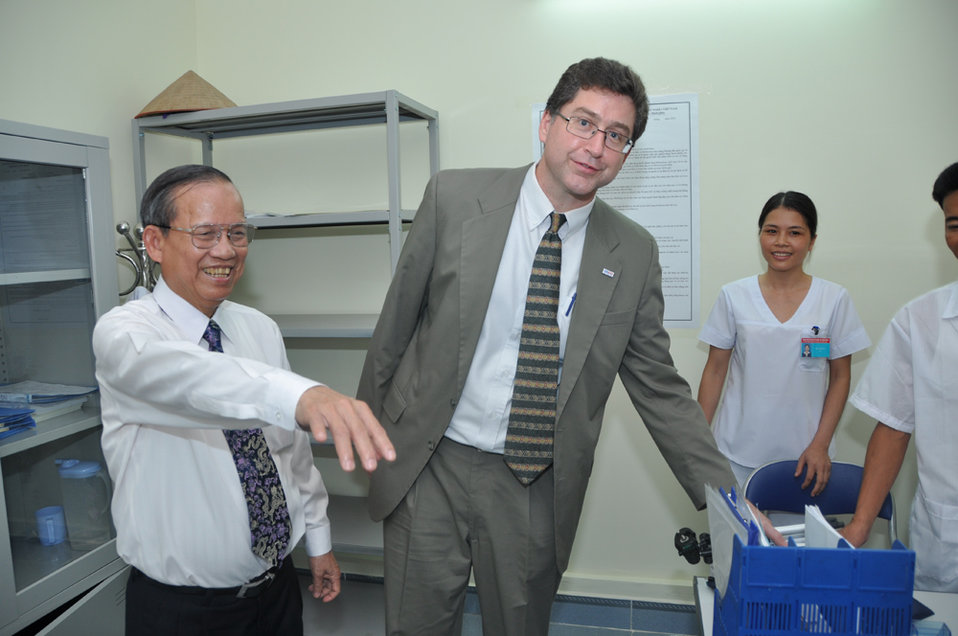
Co-pay Methadone Treatment Center Opens in Hai Phong on June 18, 2011

Deputy Prime Minister Truong Vinh Trong.